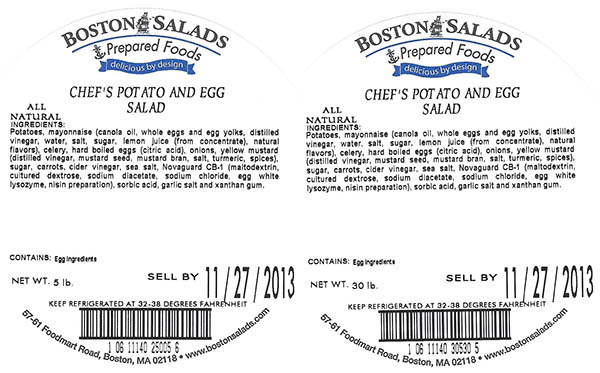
RECALLED – Prepared salads

October 24, 2013 – Product Recall – Boston Salads and Prepared Foods Recalling Ready-To-Eat Products Because of Possible Health Risk.